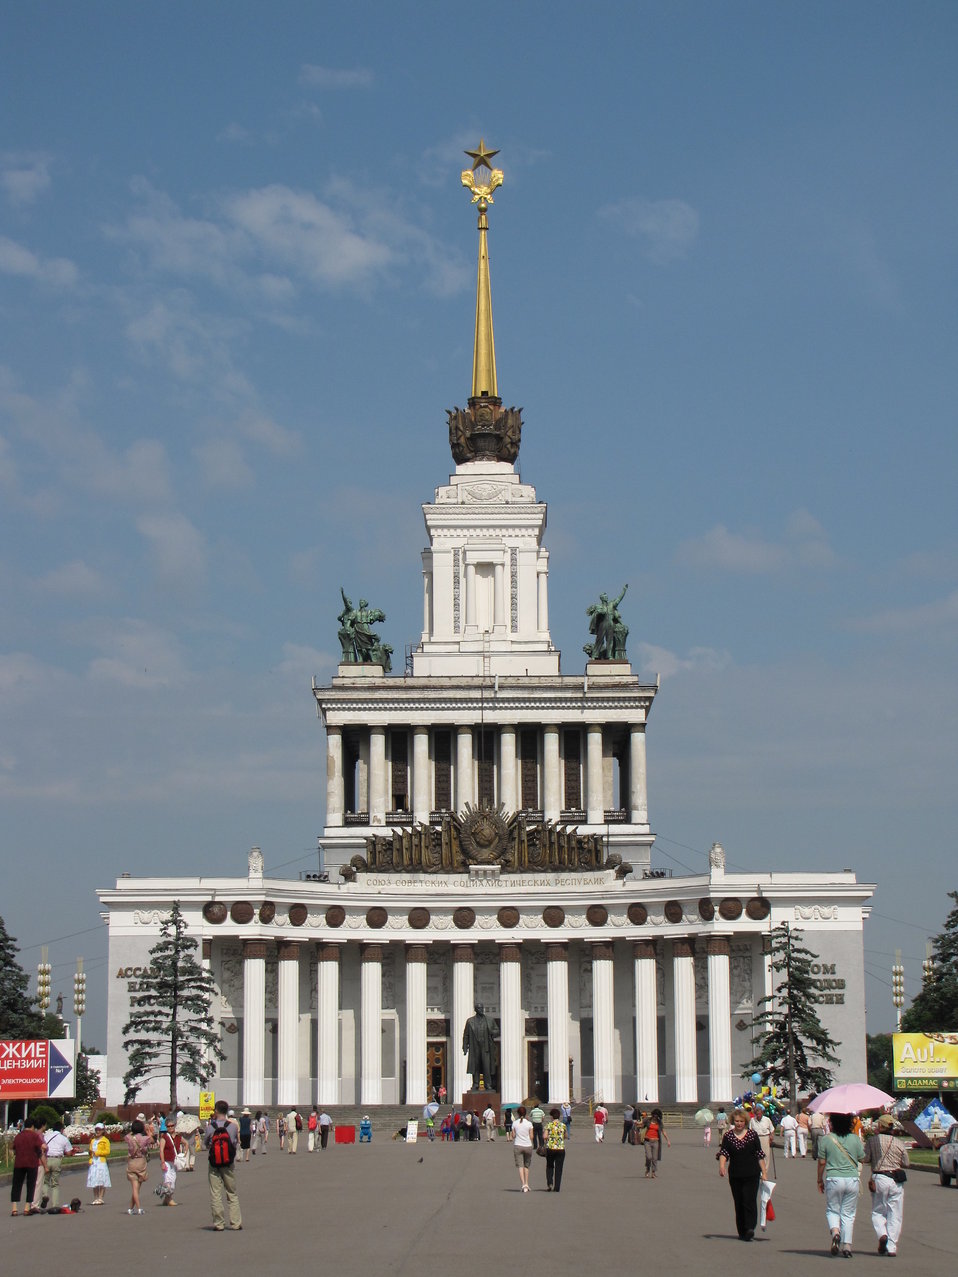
Русский: Вид главного павильона в августе 2009 года